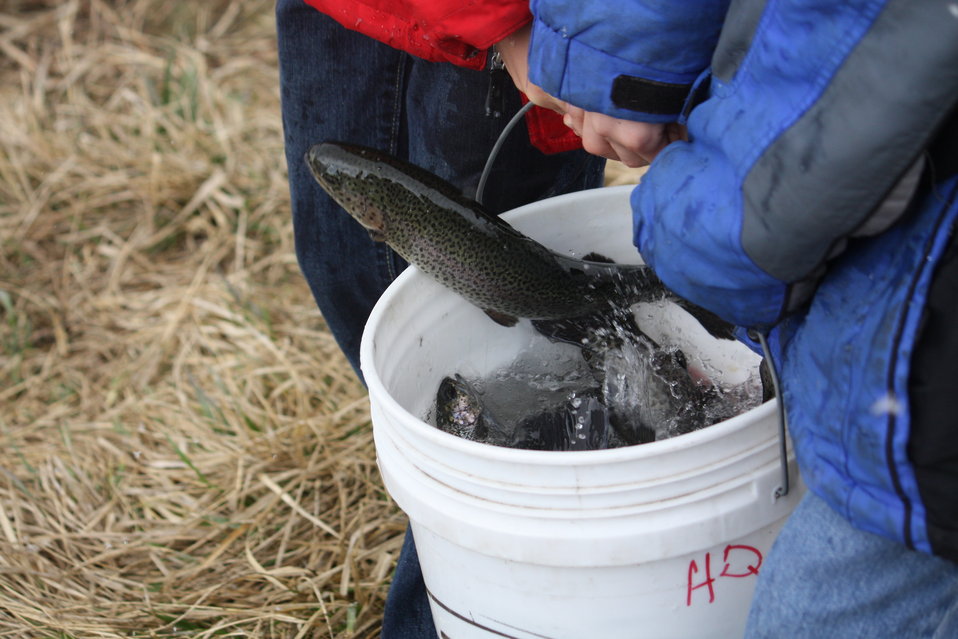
DryBridge Stocking

Despite the cold, snowy day, children help with stocking fish at DryBridge Pond in Kalispell, MT.